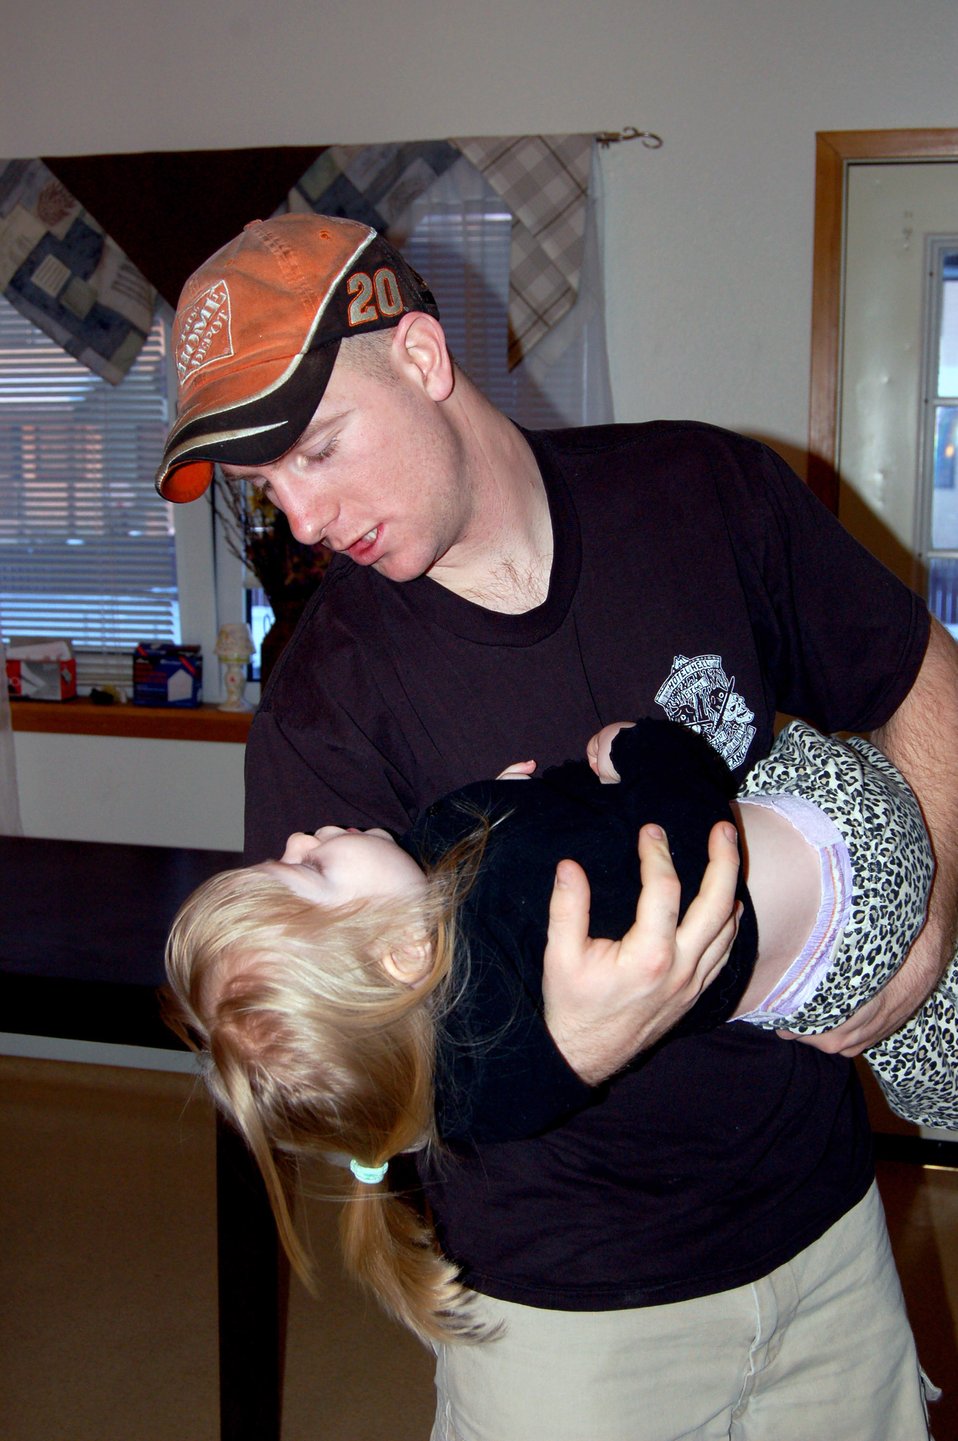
Eielson helps Airmen move into new homes in a hurry

Staff Sgt. Philip Bridges tickles his 2-year-old daughter, Liberty, at their new home in base housing Feb. 27 at Eielson Air Force Base, Alaska. They were one of 300 families living in the Sprucewood Homes edition of the base's privatized housing. The Bridges and other Air Force families had to be moved out of the privatized housing into new housing from September to December. The reason for the move was due to a conclusion of a privatized housing contract that wasn't able to be renegotiated.